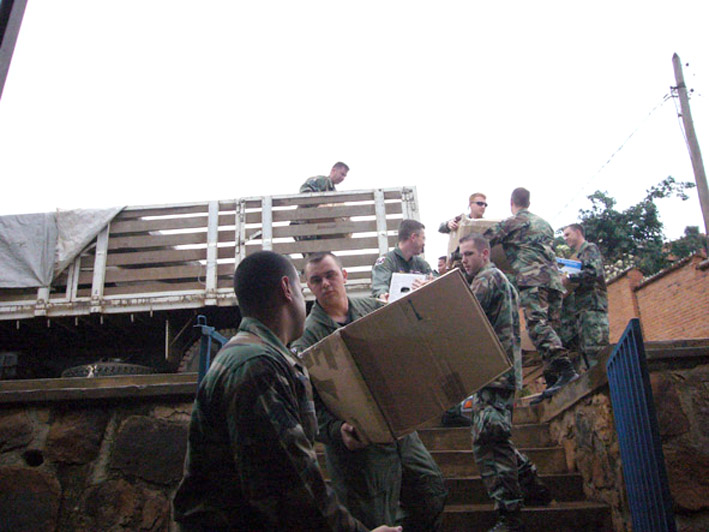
Ramstein Airmen connect with Rwandan children

Airmen drop off boxes of blankets, school supplies and clothing at an orphanage in Kigali, Rwanda, Sept. 22. The donations were collected from various Air Force and Army units in the Kaiserslautern Military Community.